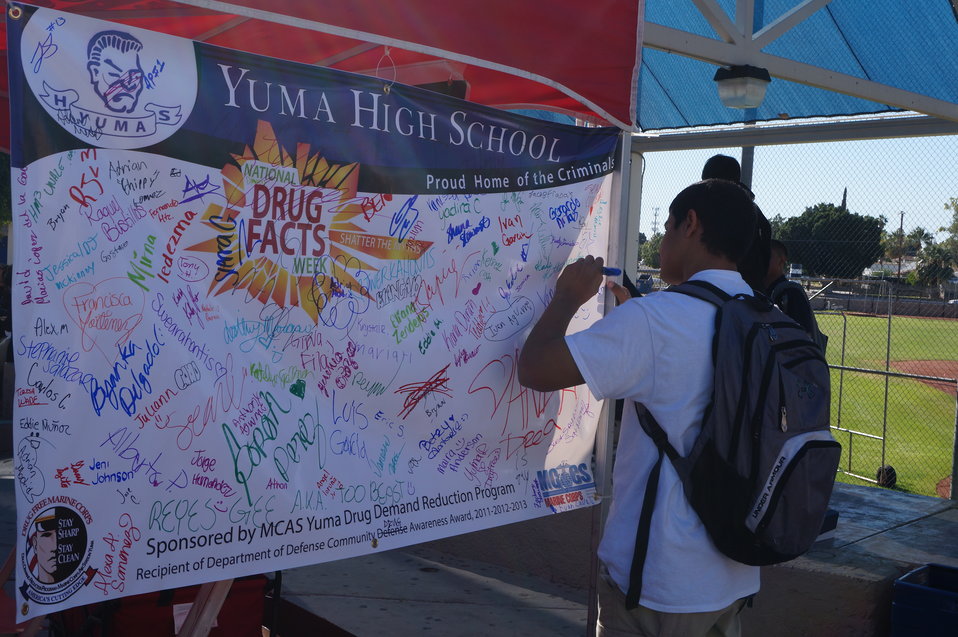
National Drug Facts Week - YUMA HIGH

The Drug Demand Reduction Program out of Yuma Arizona held numerous events at local schools to support NIDA's National Drug Facts Week, Jan. 27-Feb. 2 2014. Teens participated in drug awareness games, and helped to Shatter the Myths about teen substance abuse.